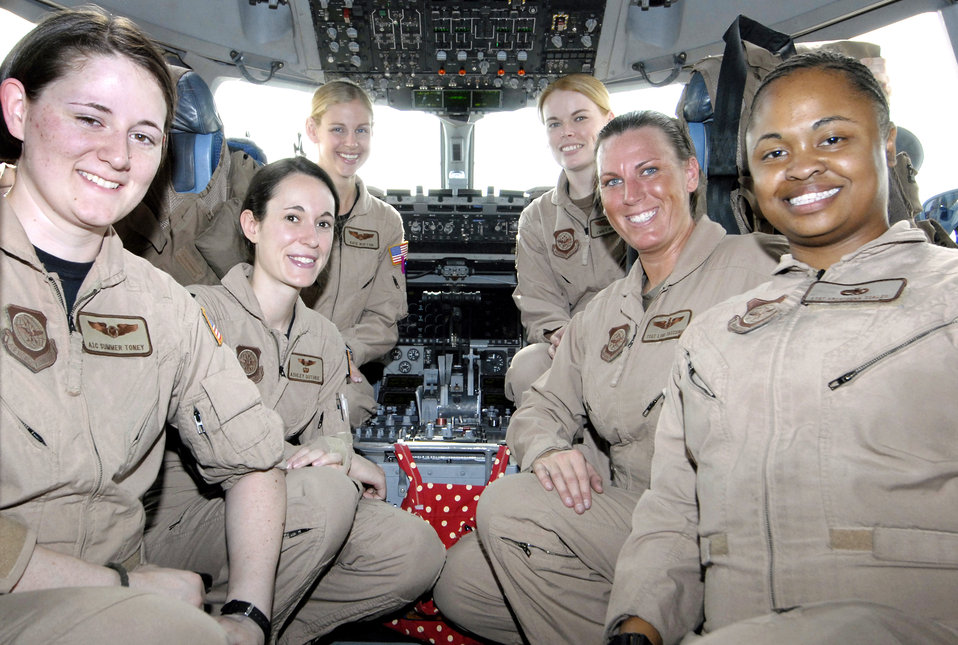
Women's History Month: All-female crew supports warfighters

Airman 1st Class Summer Toney, 1st Lt. Ashley Guthrie Capt. Kate Bufton, Capt. Emily Nelson, Tech. Sgt. Lori Tascione and Staff Sgt. Krysteena Scales make up an 816th Expeditionary Airlift Squadron flight crew about to depart on a C-17 Globemaster III mission March 19 at an air base in Southwest Asia. Airman Toney is a loadmaster from Long View, Texas. Lieutenant Guthrie is a pilot from Tulsa, Okla. Captain Bufton is a co-pilot from Charleston, S.C. Captain Nelson is the aircraft commander from Orange, Calif. Sergeant Tascione is a loadmaster from Waddell, Ariz. Sergeant Scales is a flying crew chief from Flint, Mich. All are deployed from Charleston Air Force Base, S.C. in support of operations Iraqi Freedom and Enduring Freedom.